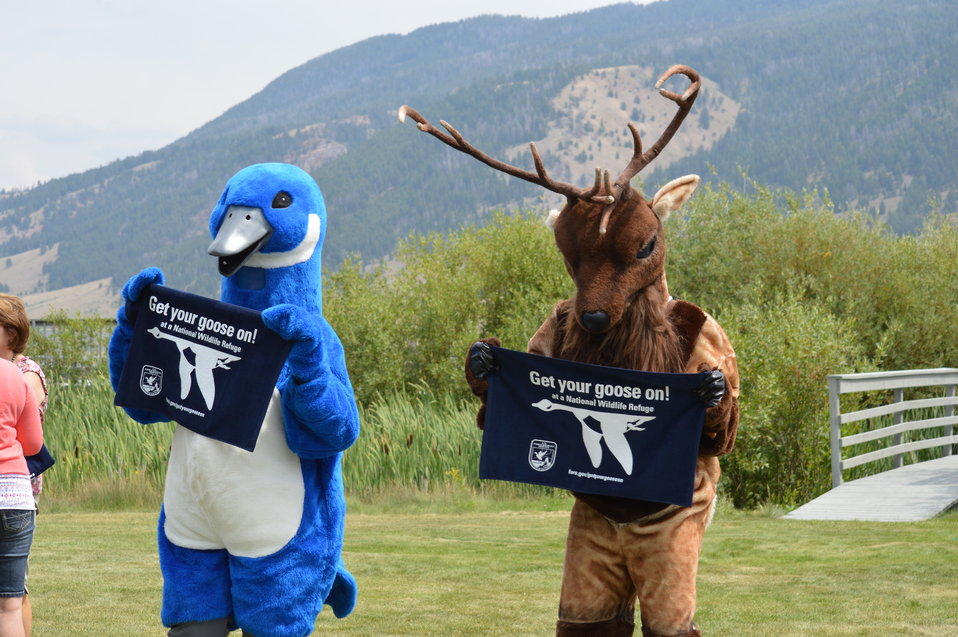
Get Your Goose On! - National Elk Refuge Style

On August 10, 2012 the U.S. Fish and Wildlife Service and Partners celebrated the 100 year anniversary of the establishment of the National Elk Refuge. In these photos, young attendees, along with Puddles the Blue Goose and the National Elk Refuge's mascot, showed us how to Get Your Goose On! with style.